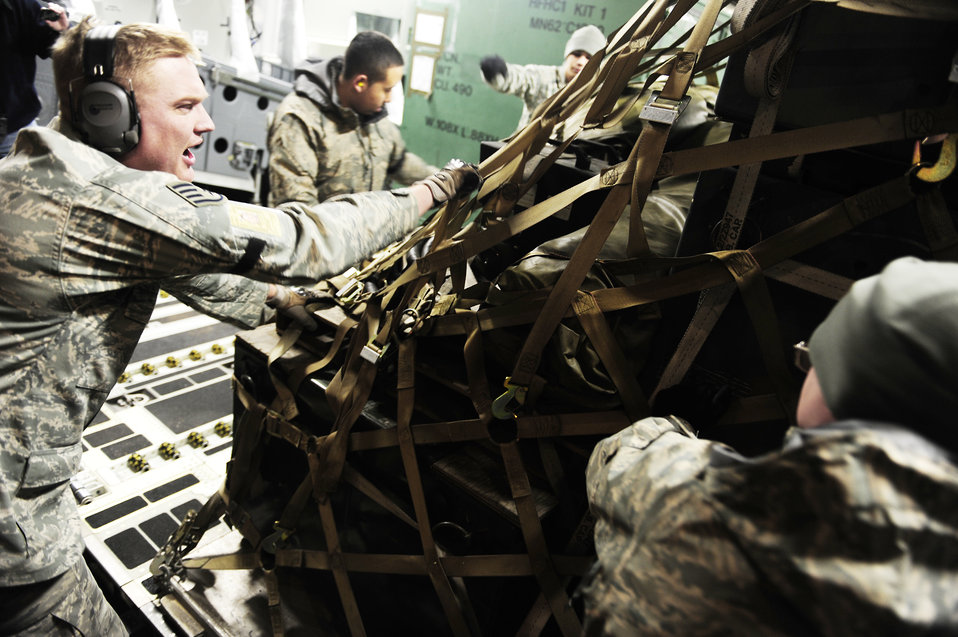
Haiti Relief Operations

Airmen load cargo onto a C-17 Globemaster III Jan. 14, 2010 at Joint Base McGuire-Dix-Lakehurst, N.J., supporting relief efforts to Haiti. The Airmen are assigned to the 621st Contingency Response Wing at JB McGuire.